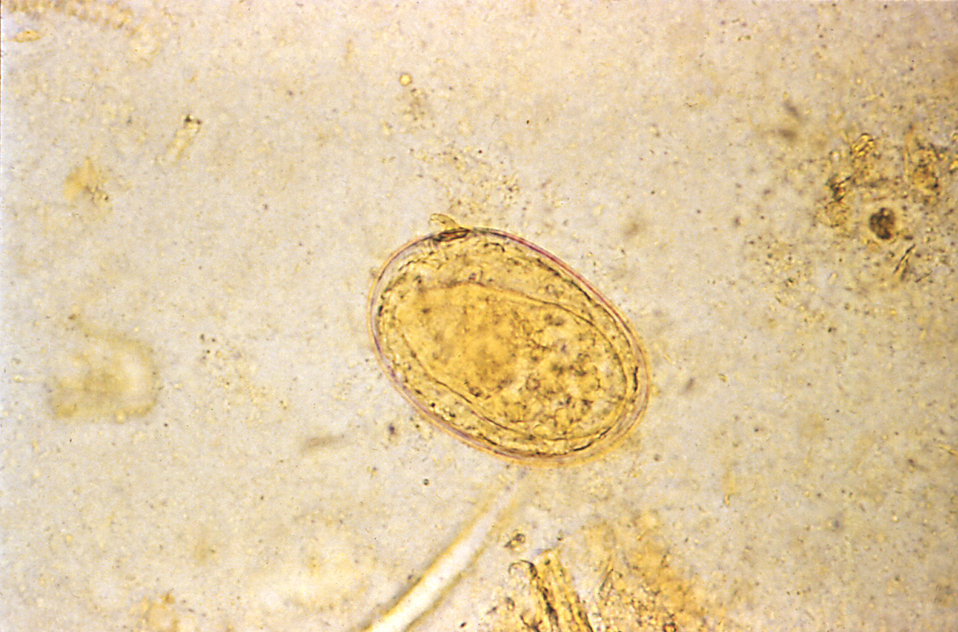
This unstained micrograph depicts an egg from a Schistosoma japonicum trematode parasite; Mag. 500X.